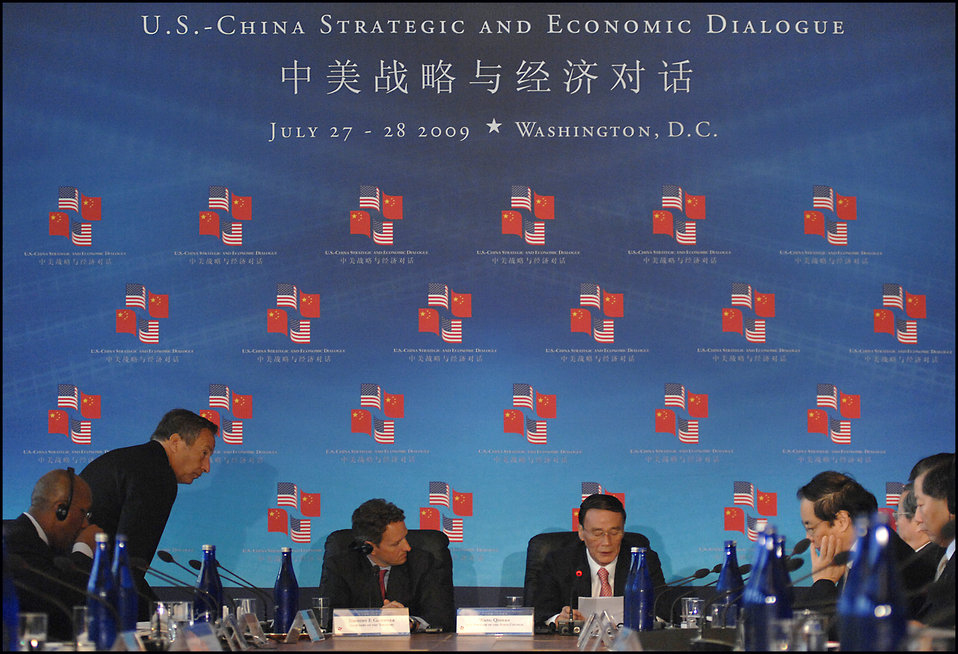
SandED: July 27-28, 2009

Secretary Geithner and Vice Premier Wang meeting at the U.S.-China Strategic and Economic Dialogue held in Washington, D.C. on July 28, 2009.